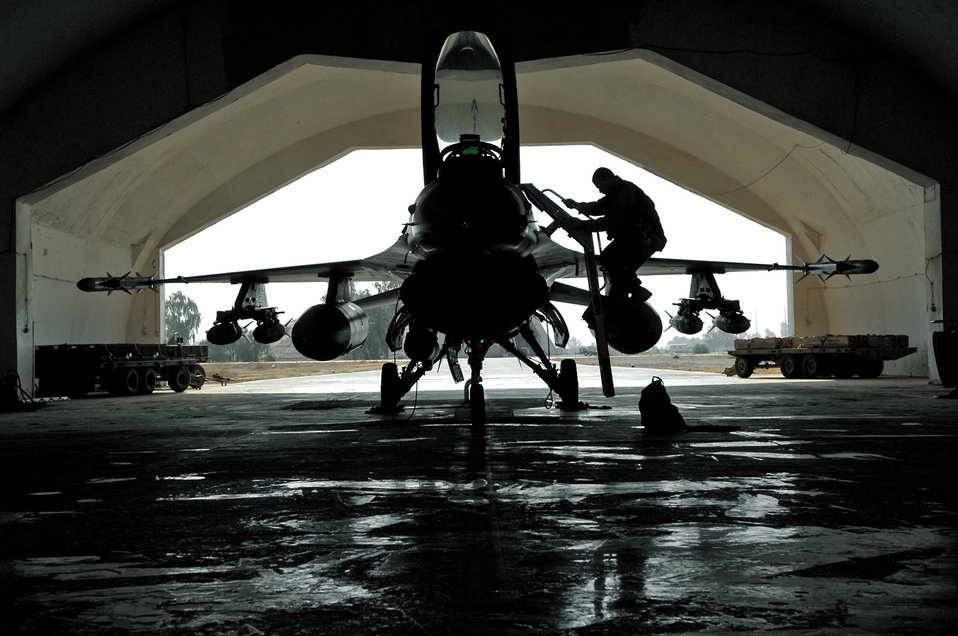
April 24 airpower summary: F-16s fly combat sortie missions

Lt. Col. Brick Izzi climbs into an F-16 Fighting Falcon before a combat sortie. Air Force pilots have been flying operations over Iraq since 1991, the beginning of the first Gulf War. While the tactics and technology have evolved, the goal of helping to keep ground warriors safe while integrating with their missions has remained. Colonel Izzi, the 421st Expeditionary Fighter Squadron commander, is deployed from Hill Air Force Base, Utah.